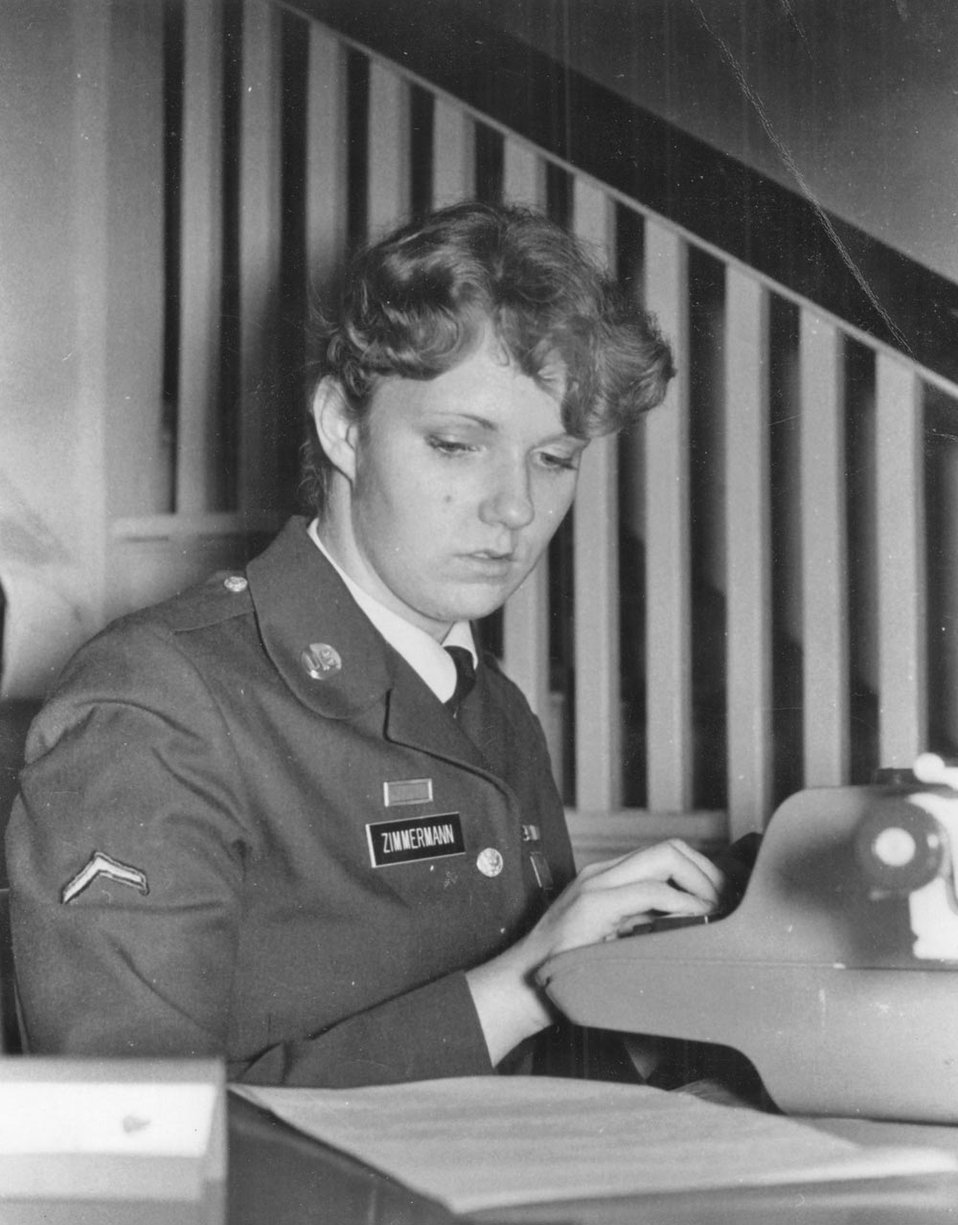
Susan Zimmermann -- Midwest Region

Susan C. Zimmermann, the Administrative Coordinator for the Ecological Services Office in Columbus, Ohio, enlisted in the Army right after high school in 1974, and she was one of the last WACs (Woman's Army Corps) before the Army integrated all genders into 'Regular' Army. She was stationed (after basic training) on Fort Riley, Kansas (Big Red One), located just outside Manhattan, Kansas, (She says he “went from the Big Apple to the Little Apple”) as a Clerk/Typist (Admin Support), Private First Class in the 937th Engineer Group supporting Draftsman, Engineers & Intelligence. At the end of my three years in the service my rank was Specialist 4th Class (Spec 4). She says she’s “always building on the lessons first achieved from the Military.”